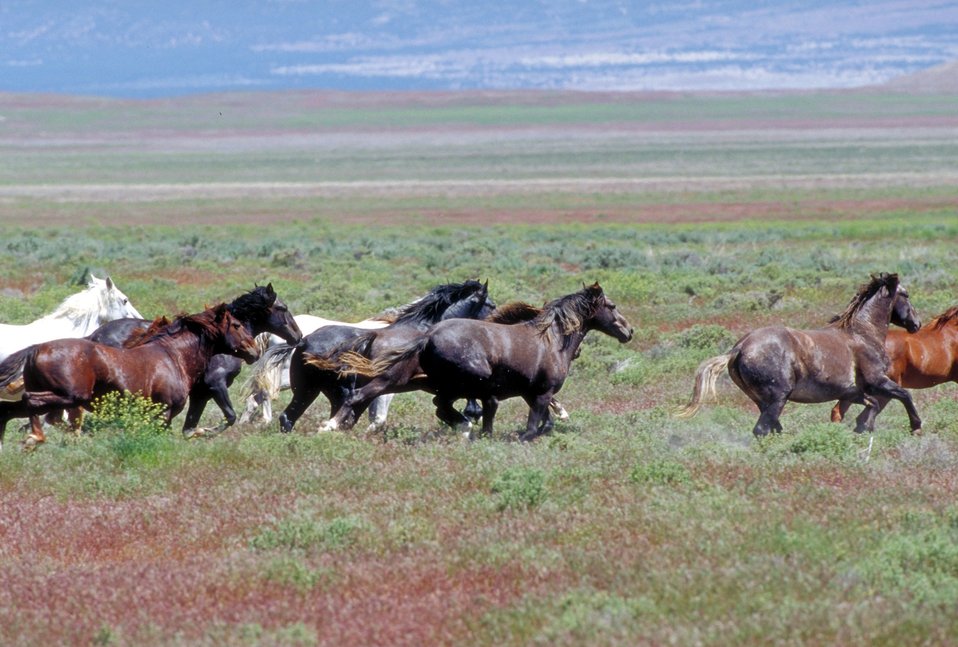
Onaqui Herd near Dugway, Utah.